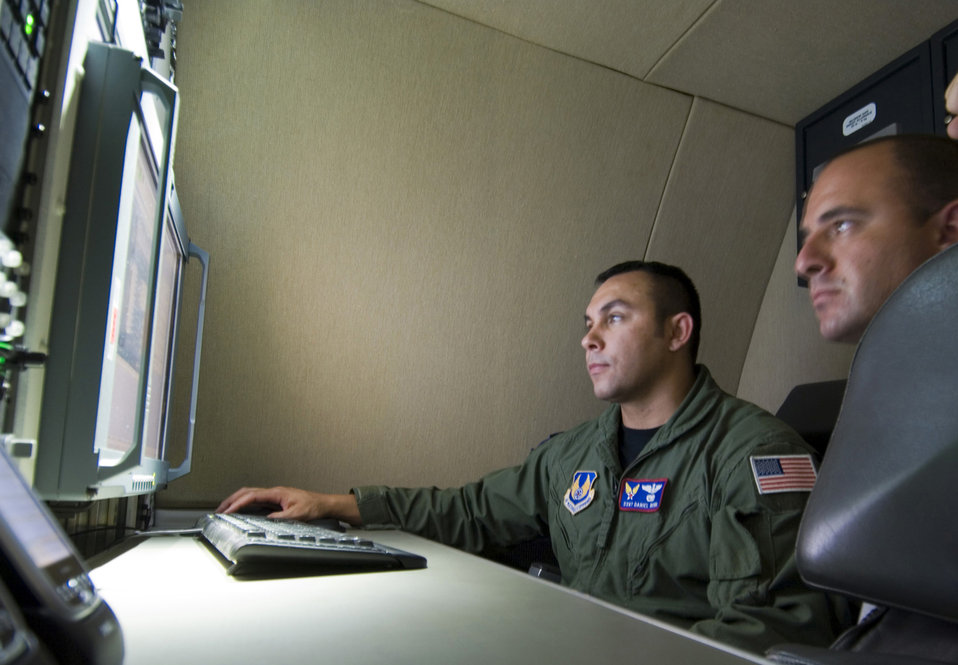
Hanscom team works to upgrade airborne comm for top U.S. officials

Staff Sgt. Daniel A Wowk (left) describes features of Test Tanker II to 2nd Lt. Dan Elias of the SCP Program office June 30 at Hanscom Air Force Base, Mass. The Hanscom AFB-based program team will use Test Tanker II to test standardized command, control and communications equipment that will be incorporated on a special fleet of aircraft used to transport senior U.S. officials. Sergeant Wowk is a communications systems operator from the 412th Flight Test Squadron out of Edwards AFB, Calif.